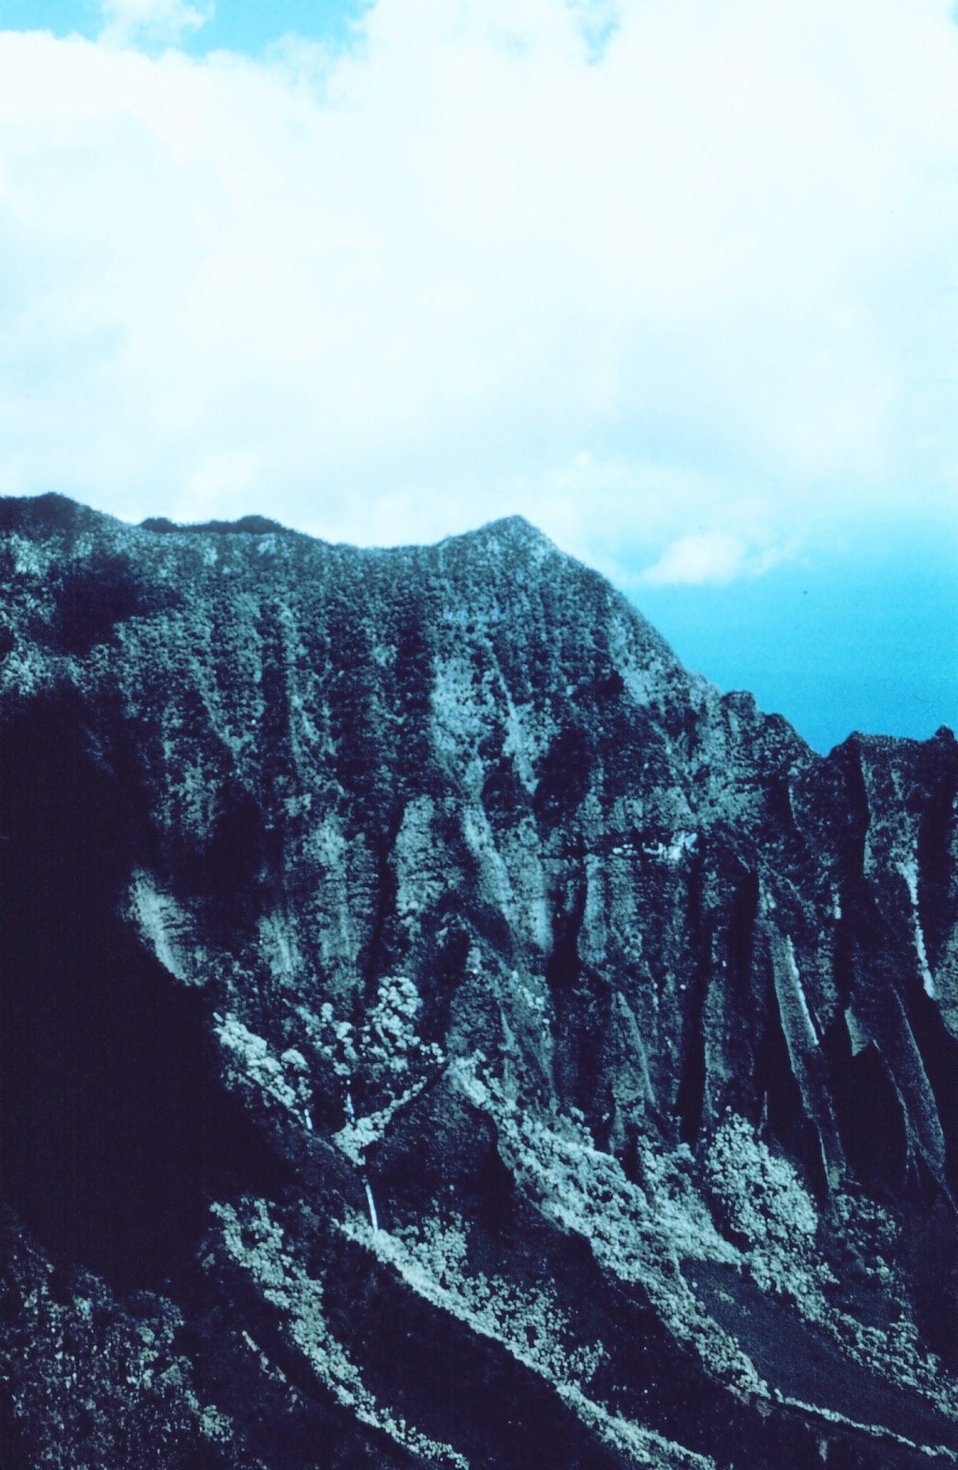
Na Pali